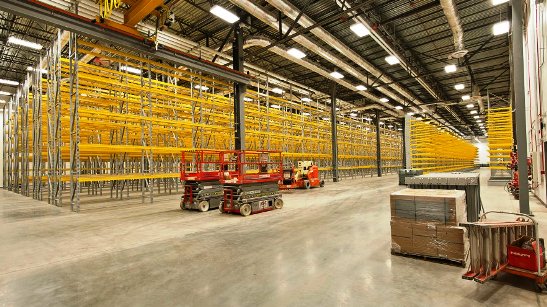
The new smaller, more efficient Kansas City Plant will reduce annual operating costs by $100 million supports the NNSA vision of a more responsive and cost-effective nuclear security enterprise.